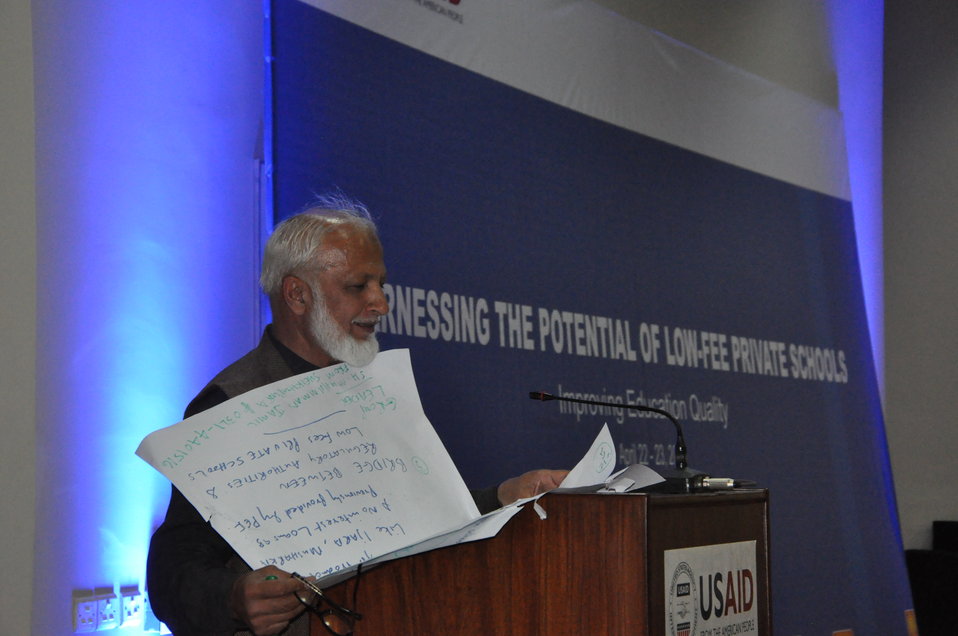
A team leader reading out his group's suggestions